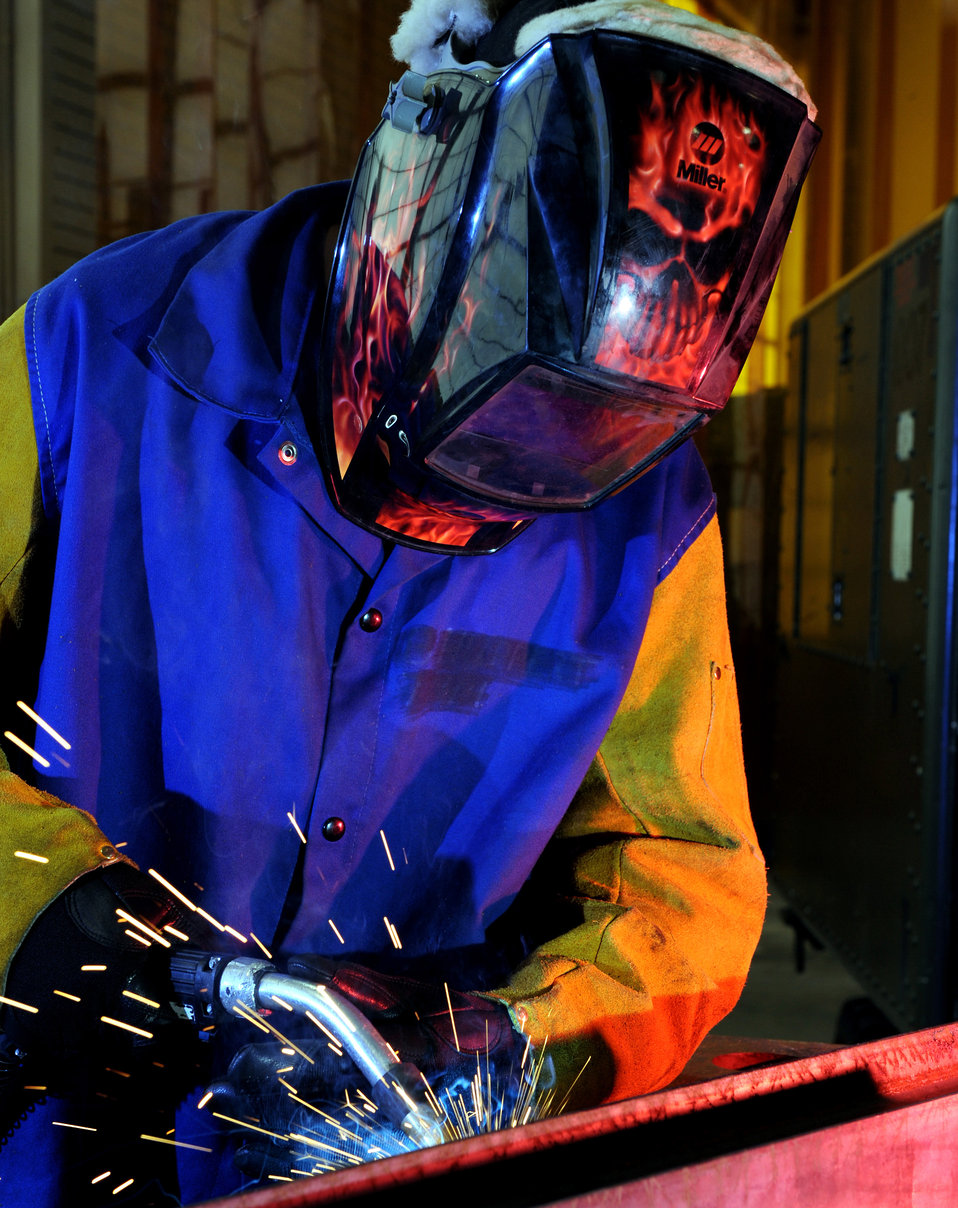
All fired up

Airman 1st Class Ryan Foxx welds a metal bracket on an engine stand April 16 at Nellis Air Force Base, Nev. He is a metals technician from the 57th Components Maintenance Squadron. The 57th CMS is responsible for the structural maintenance of all aircraft assigned to the 57th Wing.